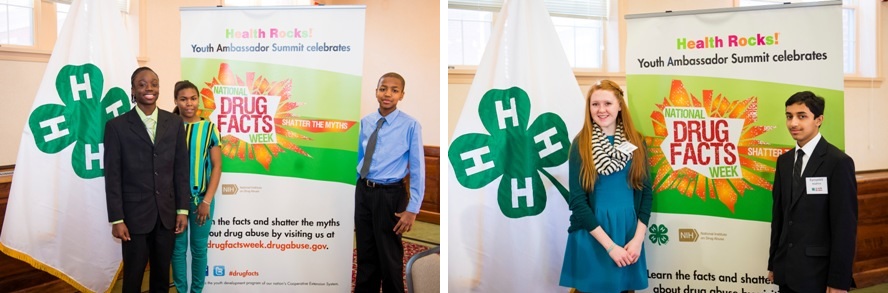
National 4-H Council Celebrates National Drug Facts Week, Launches New Healthy Living App

National 4-H Council in partnership with the National Institute on Drug Abuse (NIDA) hosted the first Health Rocks! Youth Ambassador Summit on January 30. The event, which was part of NIDA’s 4th annual National Drug Facts Week, brought together youth and adult leaders from several states and industry leaders to discuss solutions to fight substance use and abuse in their communities.